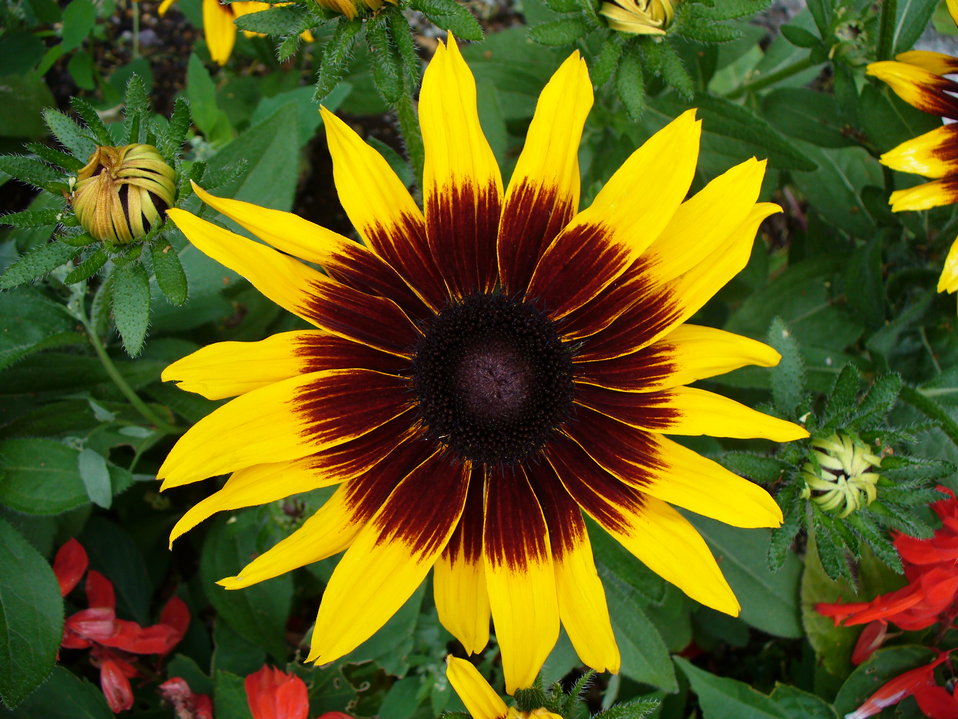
I am the originator of this photo. I hold the copyright. I release it to the public domain. This photo depicts a flower.